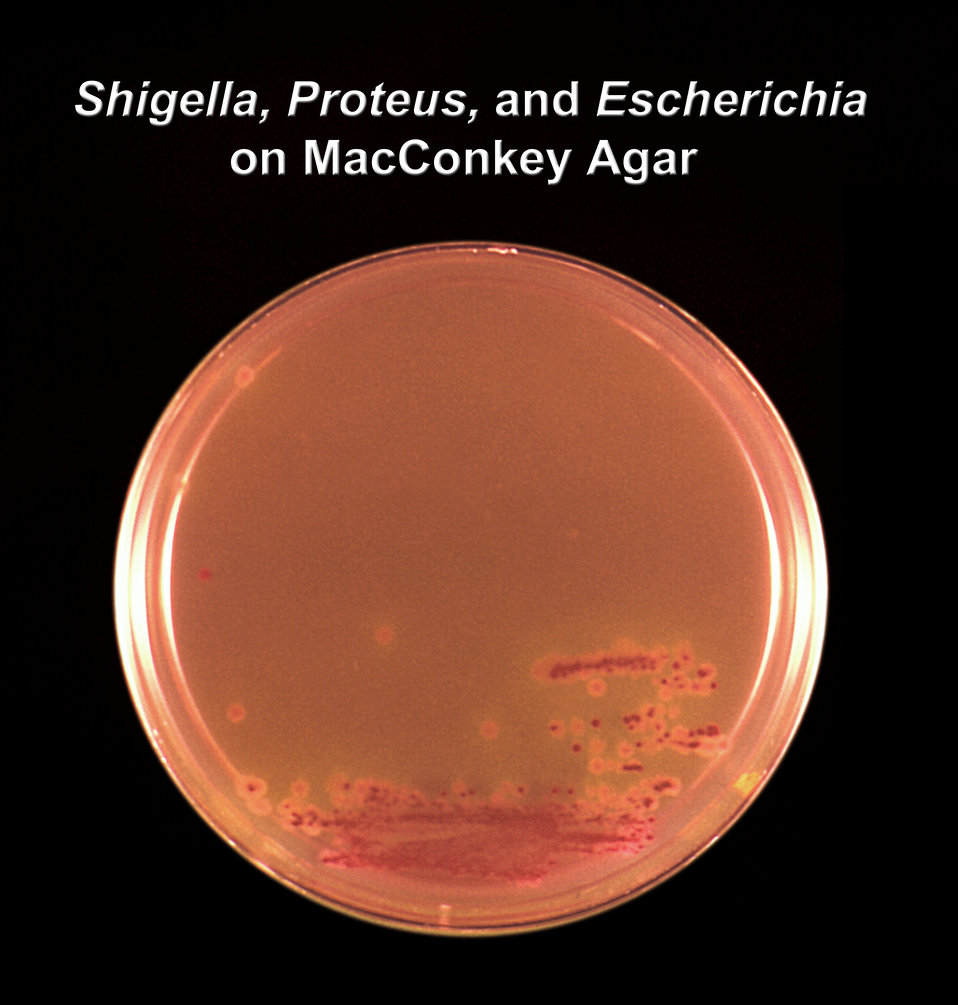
This Petri dish culture plate had been filled with MacConkey agar medium, and had been inoculated with three different bacteria from the family Enterobacteriaceae, which included Shigella sp., Proteus sp., and Escherichia sp. Gram-negative organisms.